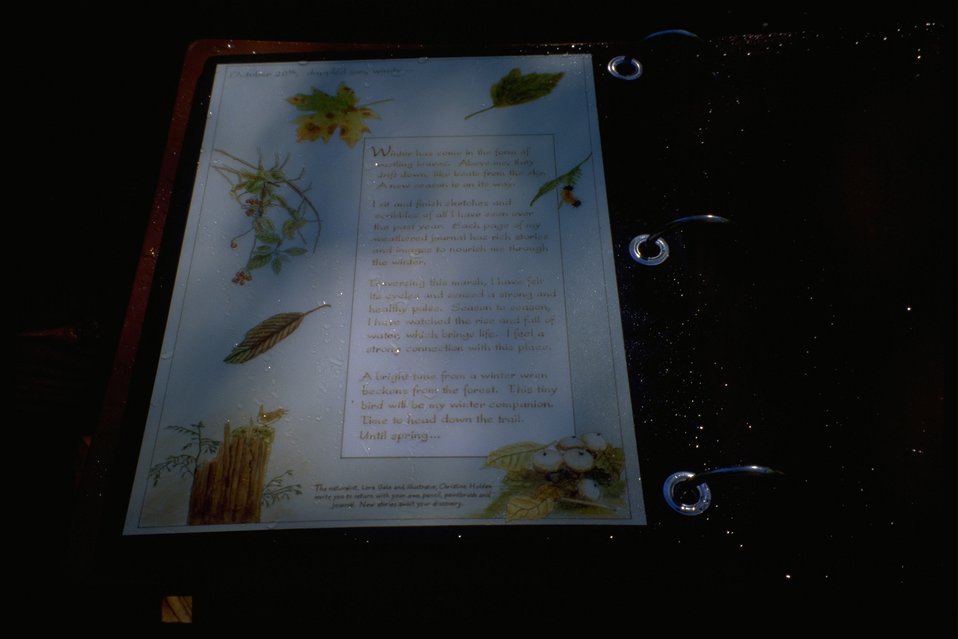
Interpretive Panels: Boardwalk Trail Journals.